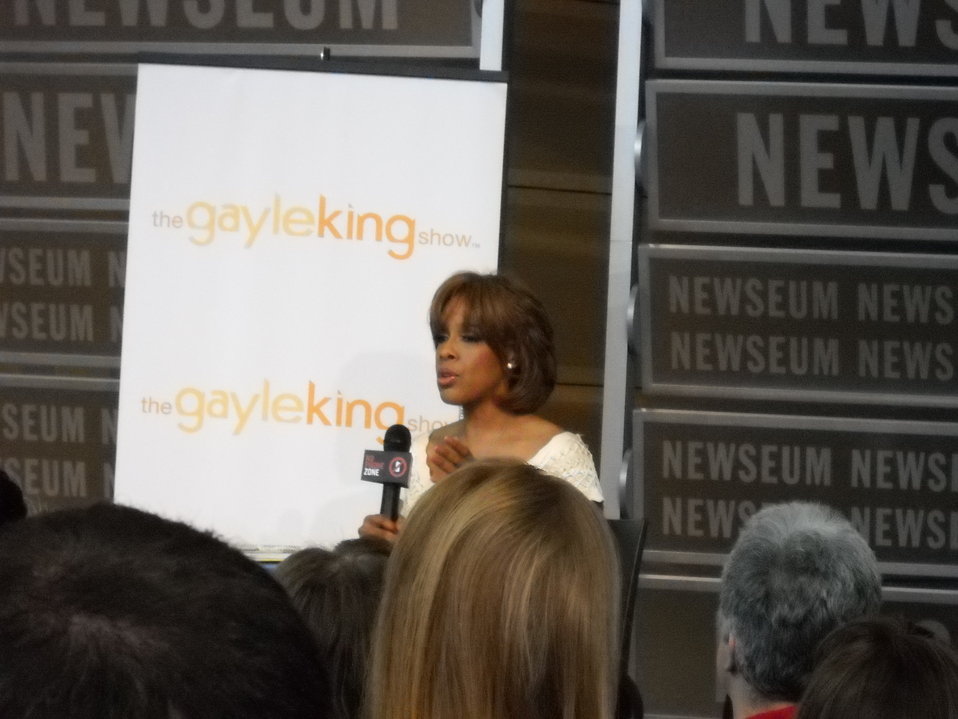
National No Phone Zone Day Newsum Washington, DC April 30, 2010 003